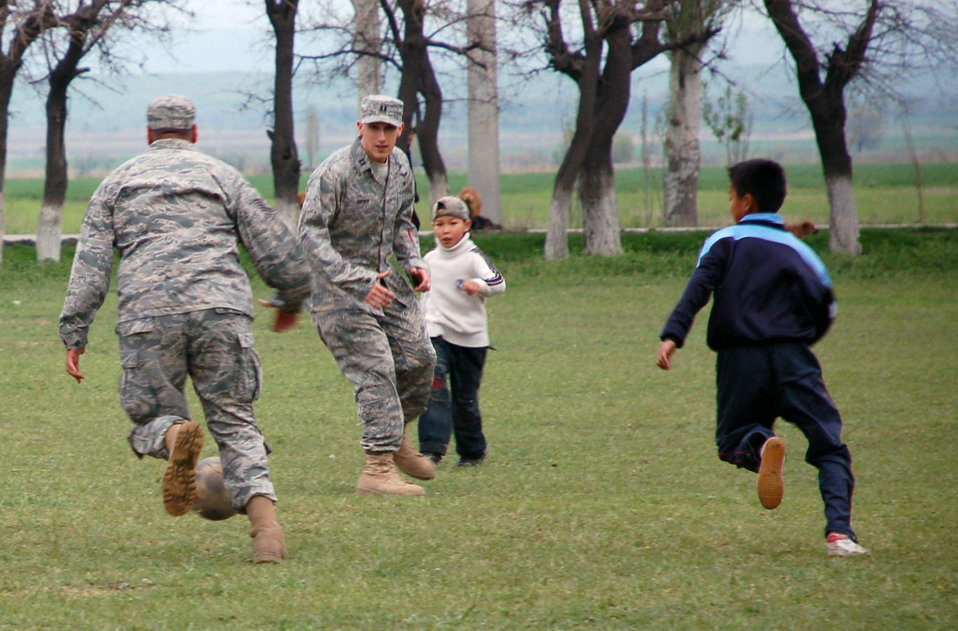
One more goal ...

Following the ground-breaking ceremony April 14 at Birdik Village School in Kyrgyzstan, students from the school challenge Airmen from nearby Manas Air Base to an impromptu game of soccer.